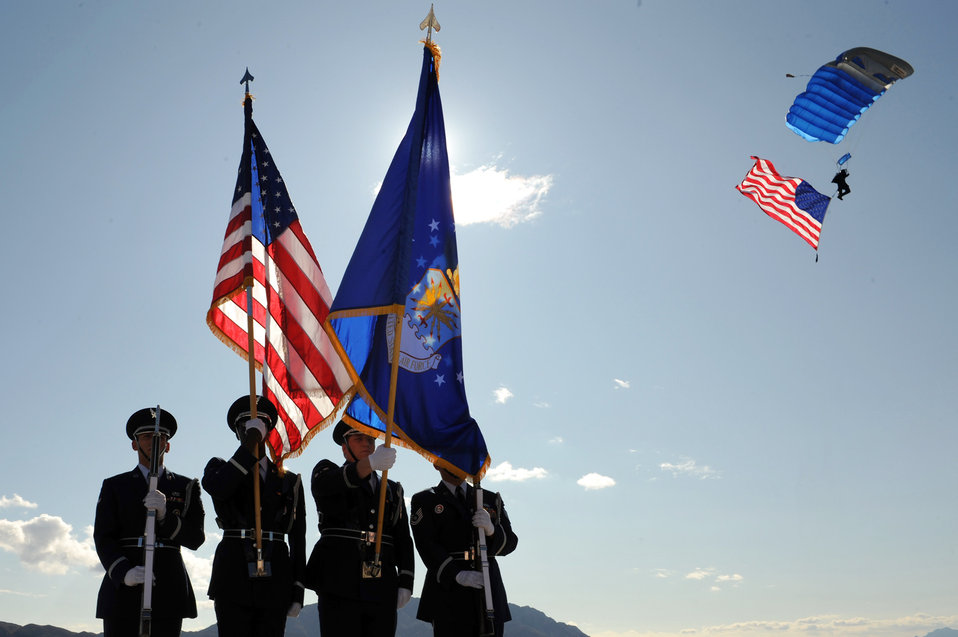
Long may it wave

The base Honor Guard presents the colors while a member of the U.S. Air Force Academy Parachute Team displays the American flag Nov. 13, 2009, during the opening ceremony of the 2009 Aviation Nation at Nellis Air Force Base, Nev. The open house is an opportunity for the Las Vegas community to view aerial demonstrations and static displays of various aircraft from the military.